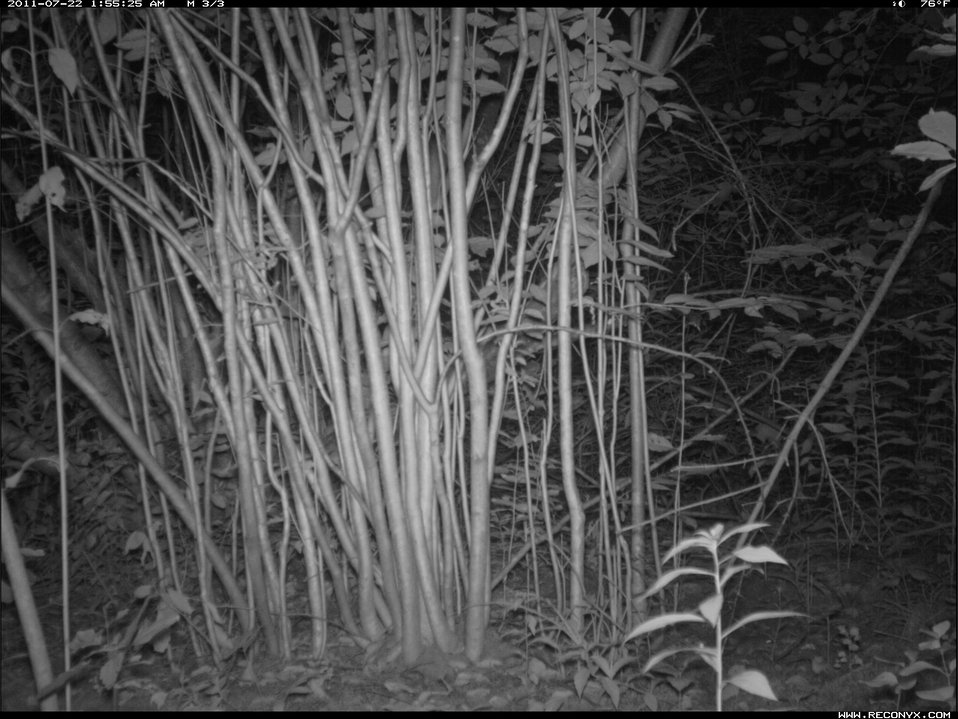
Mouse

Can you find the mouse?

clue: look in the bottom right corner